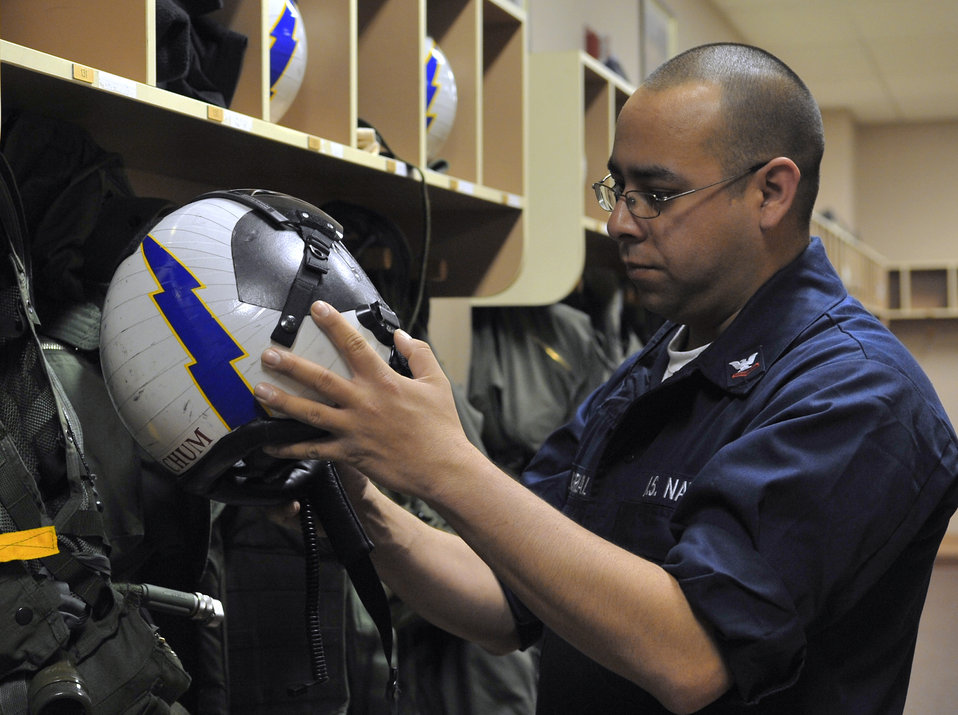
Team effort impacts Red Flag-Alaska

Navy Petty Officer 2nd Class Joseph Villarreal performs a visual inspection of a helmet during Red Flag-Alaska April 23 at Eielson Air Force Base, Alaska. Red Flag-Alaska is a Pacific Air Forces-directed field training exercise for U.S. and coalition forces flown under simulated air-combat conditions. Petty Officer Villarreal is an aviation life support equipment technician assigned to Naval Air Station Whidbey Island, Wash.